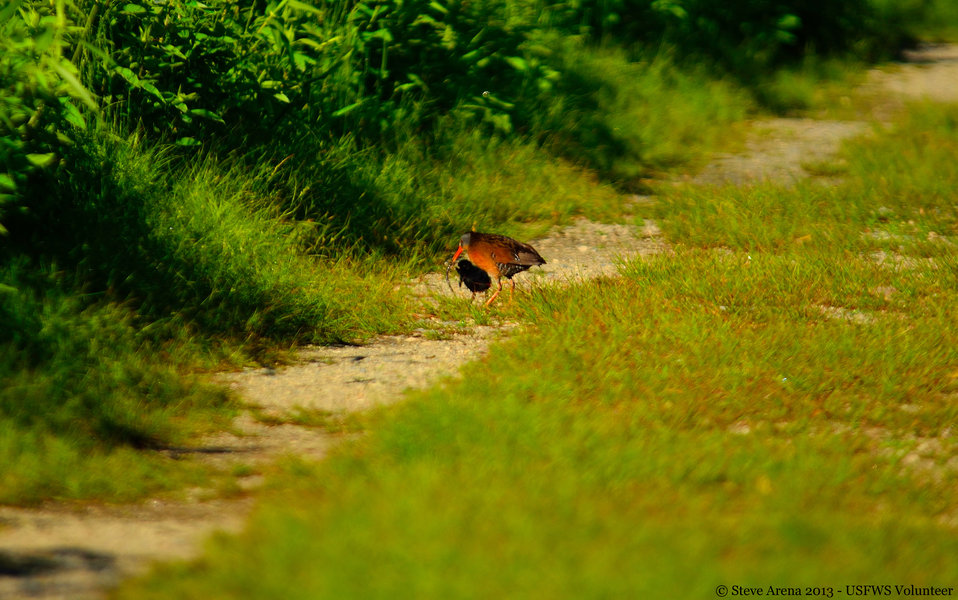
Virginia Rail (Rallus limicola) - newborn chick being fed an earthworn by an adult

Great Meadows National Wildlife Refuge, Concord, MA

Credit: Steve Arena/USFWS

09 June 2013